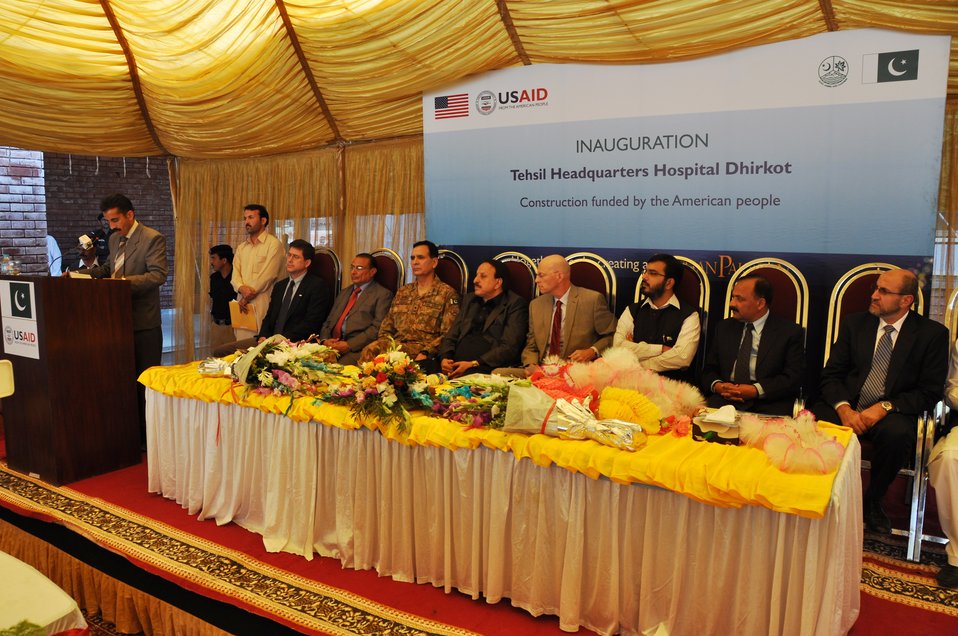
Bagh 03